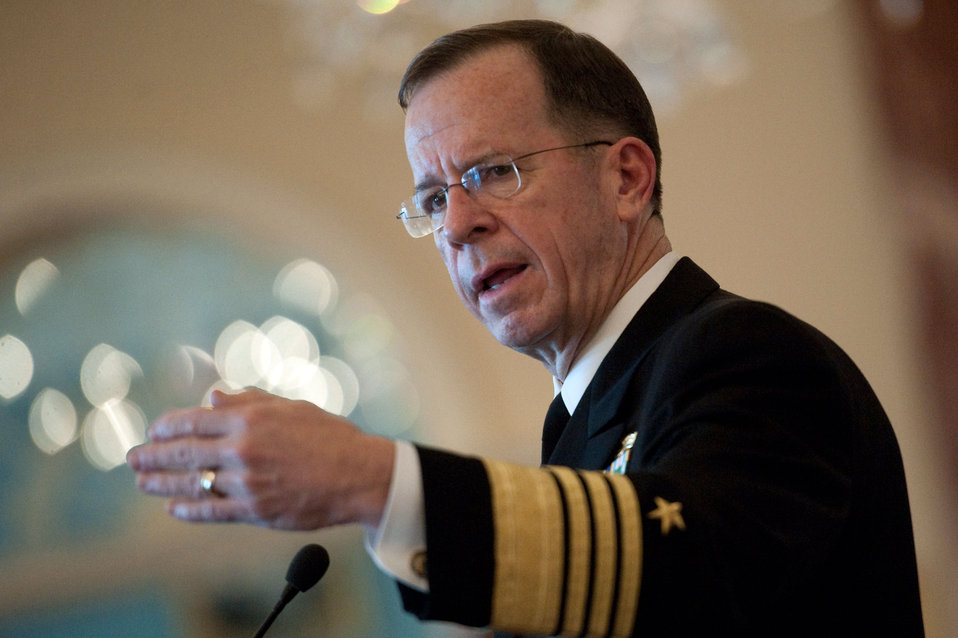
Admiral Mullen Delivers Remarks

Chairman of the Joint Chiefs of Staff, Admiral Michael Mullen, delivers remarks at the 2011 Global Chiefs of Mission Conference at the U.S. Department of State on February 2, 2011.